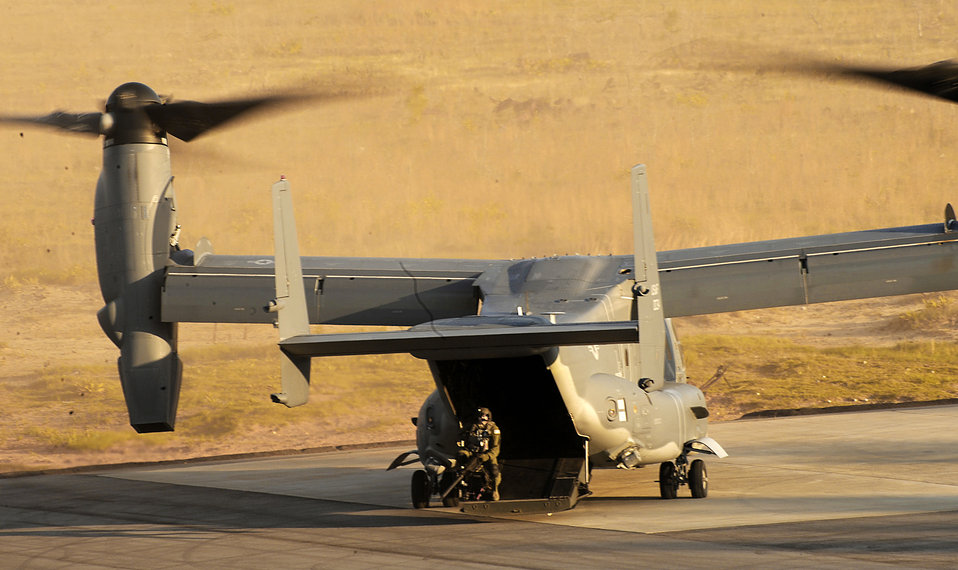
Showing its versatility

A CV-22 Osprey lands on the range April 29, 2010, at Eglin Air Force Base, Fla. The Osprey demonstrated some of its capabilities to participants of Joint Civilian Orientation Course, a secretary of Defense sponsored program. The course gives civilian community leaders the opportunity to learn about the military and national defense.